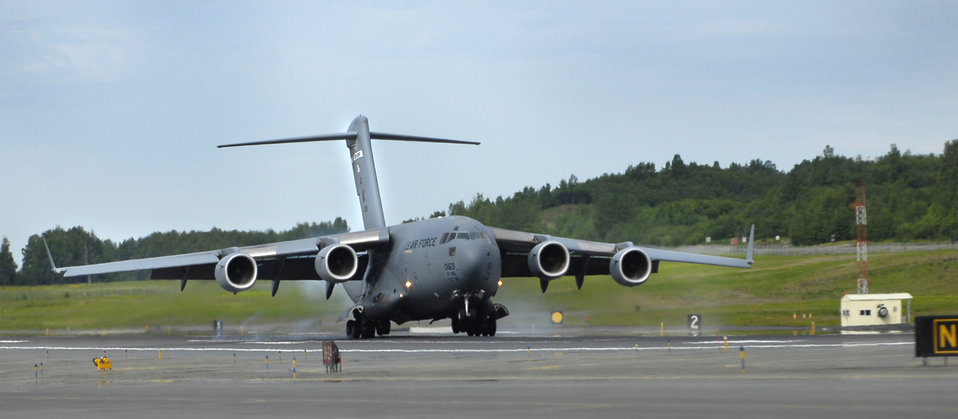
Elmendorf celebrates C-17 arrival

The C-17 Globemaster III